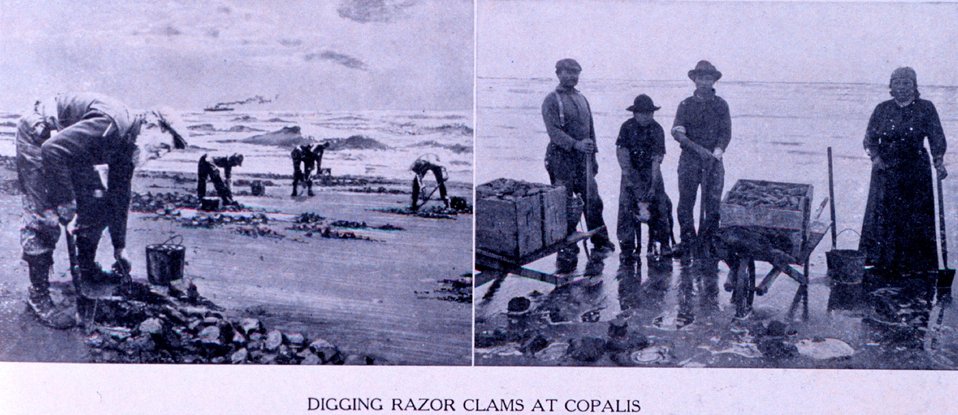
'Digging Razor Clams at Copalis.' In: 'Puget Sound and Western Washington Cities-Towns Scenery', by Robert A. Reid, Robert A. Reid Publisher, Seattle, 1912. P. 159.